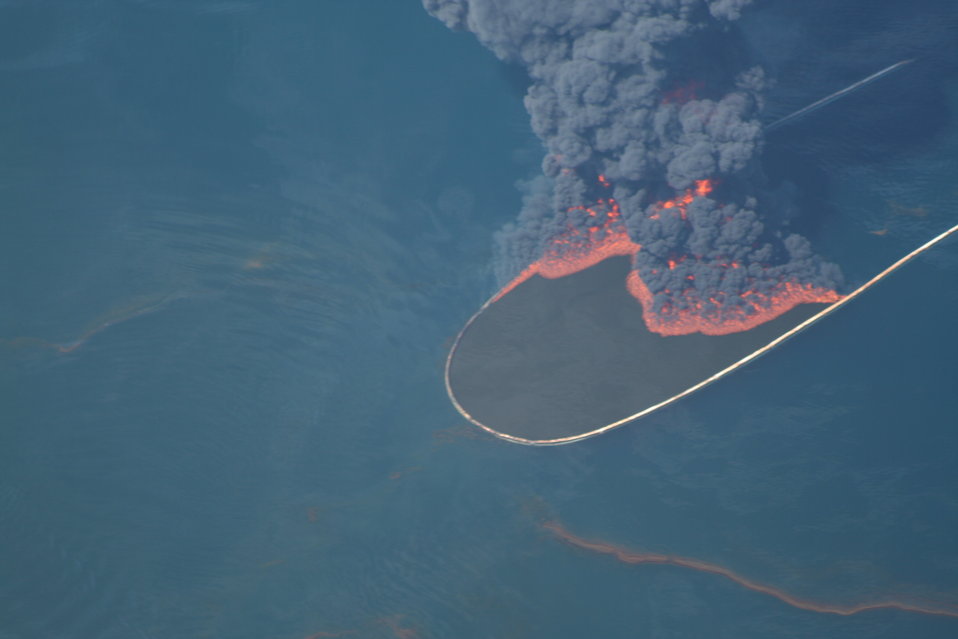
May 6 Open Water Oil Burn

May 6, 2010 - Open-water oil burn

Photo taken from U.S. EPA's Airborne Spectralphotometric Environmental Collection Technology (ASPECT) aircraft.